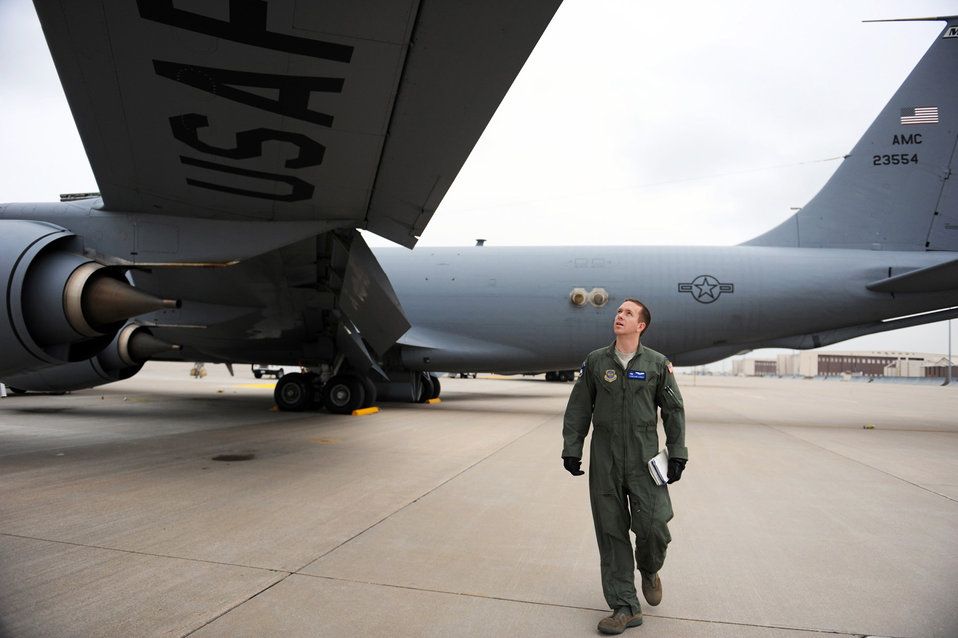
Air Refueling

Capt. Courtland Stanley conducts a preflight check on the historic